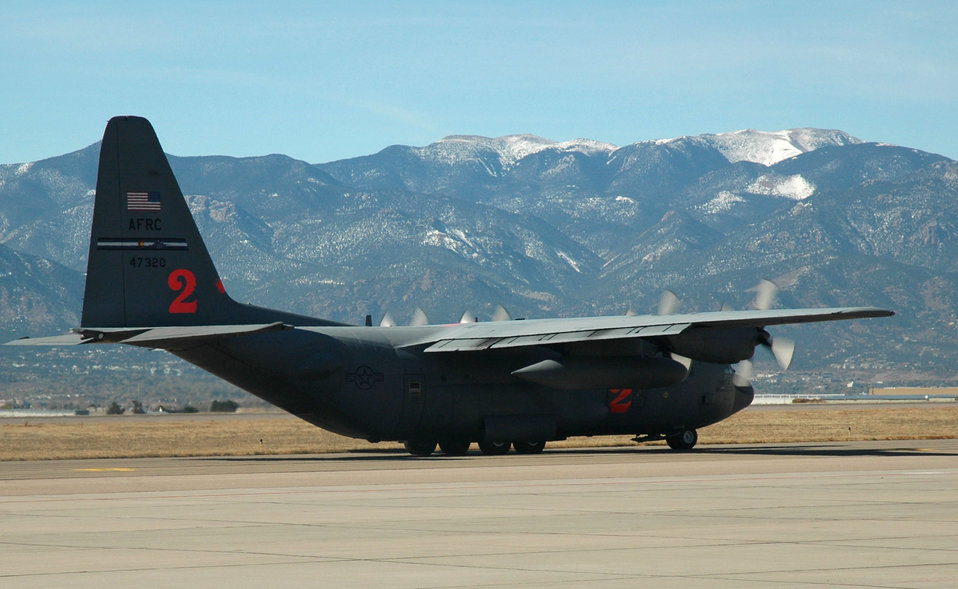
Air Force Reserve unit activated to fight California fires

An Air Force Reserve Command C-130 Hercules equipped with the Modular Airborne Firefighting System departs Peterson Air Force Base, Colo., Oct. 23 en route to Point Mugu Naval Air Station, Calif. The objective of the MAFFS program is to provide emergency capability to supplement the existing commercial airtanker support on wildland fires.